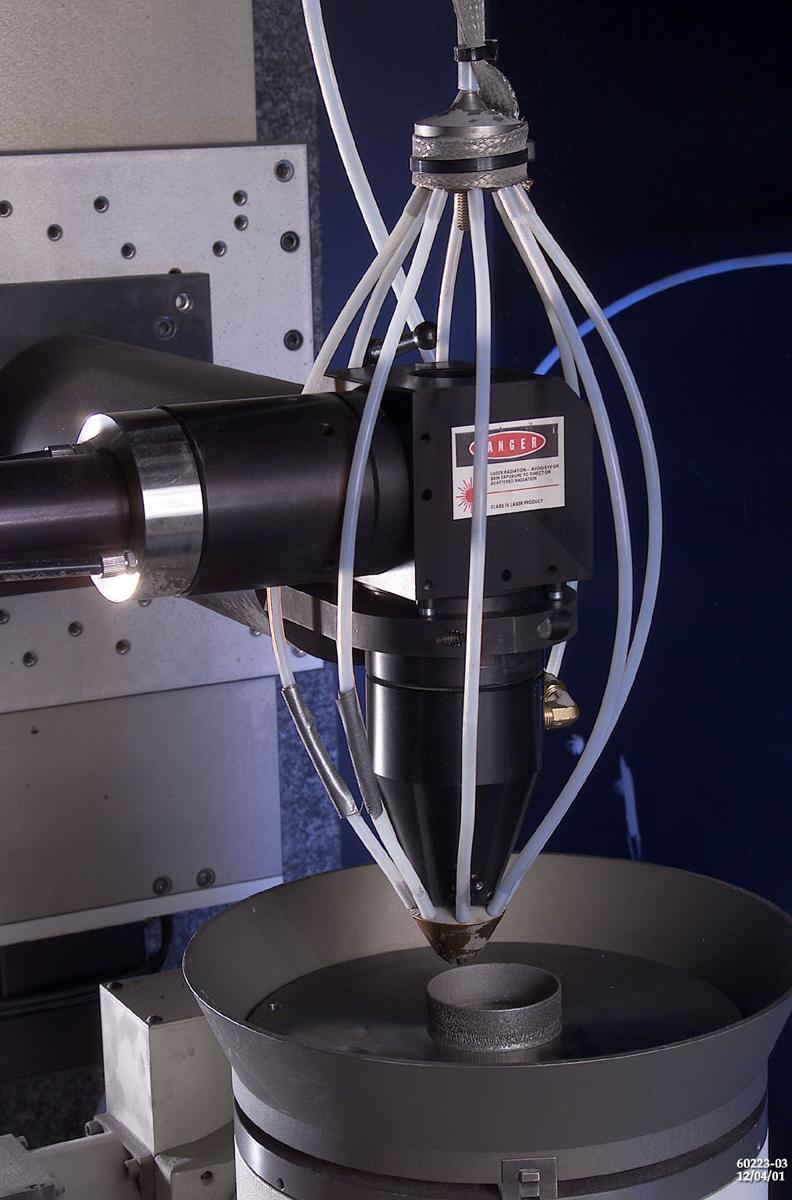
LASER APPLIED METAL PROCESSING DOE'S KANSAS CITY PLANT.

LASER APPLIED METAL PROCESSING (LAMP) IS A FULLY FUNCTIONAL MULTI-AXIS SYSTEM THAT USES POWERED METAL ALLOYS AND LASER ENERGY TO PRODUCE RAPID PROTOTYPE METAL PARTS. THE TECHNOLOGY IS BEING DESIGNED TO REVOLUTIONIZE MECHANICAL PART FABRICATION BY PROVIDING PROTOTYPES AND PRODUCTION HARDWARE IN A FAST AND ECONOMIC WAY.